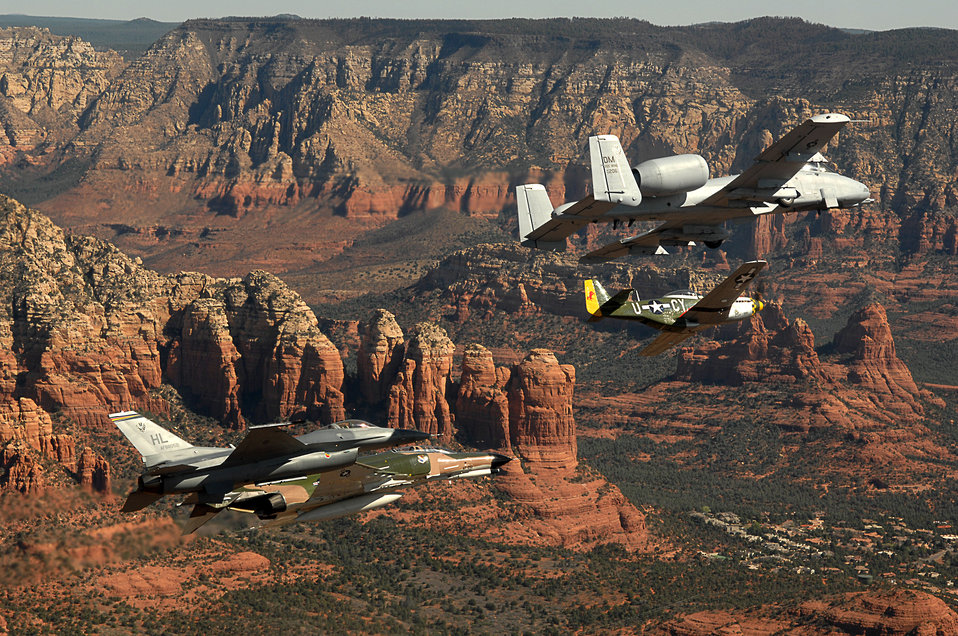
Soaring over Sedona

An Air Force heritage flight consisting of a P-51 Mustang, an F-4 Phantom, an A-10 Thunderbolt II and an F-16 Fighting Falcon fly over the Arizona desert on March 19. The flight was part of the events taking place in Phoenix for the first Air Force Week celebration of the year.